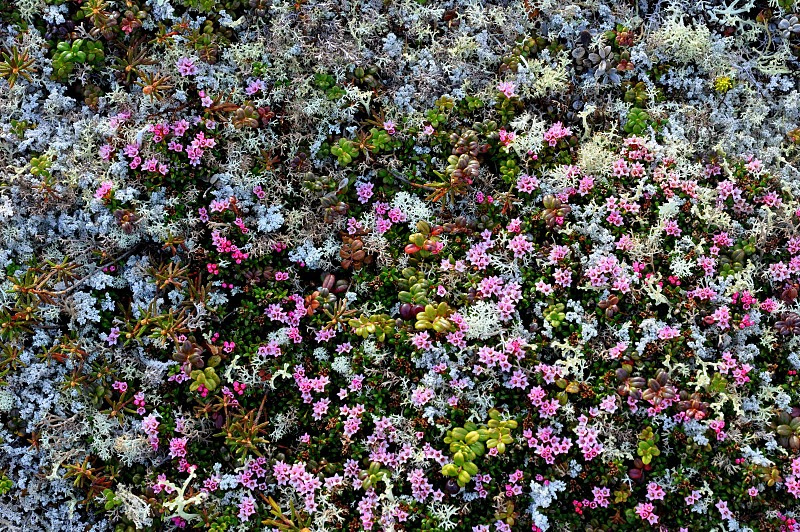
June, 2011 Tundra in bloom

Wildflowers and lichens typical of the tundra areas surrounding Bristol Bay in Alaska.

Visit www.epa.gov/bristolbay for information about EPA's Bristol Bay Watershed Assessment.